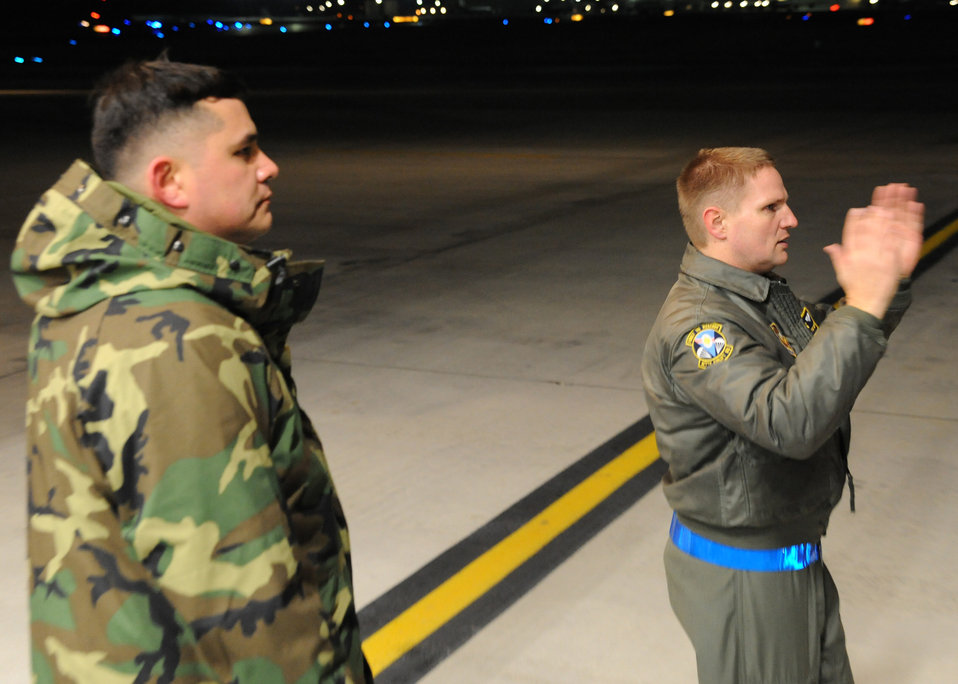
Haiti Humanitarian Effort

Master Sgt. Michael Lang and Tech. Sgt. Robert Mabry marshal equipment onto a Charleston C-17 at Joint Base McGuire-Dix-Lakehurst, New Jersey, Jan. 15, 2010. Air Mobility Command is responding with all necessary forces and equipment to aide the humanitarian efforts in Haiti. Sergeants Lang and Mabry are loadmasters with the 317th Airlift Squadron.